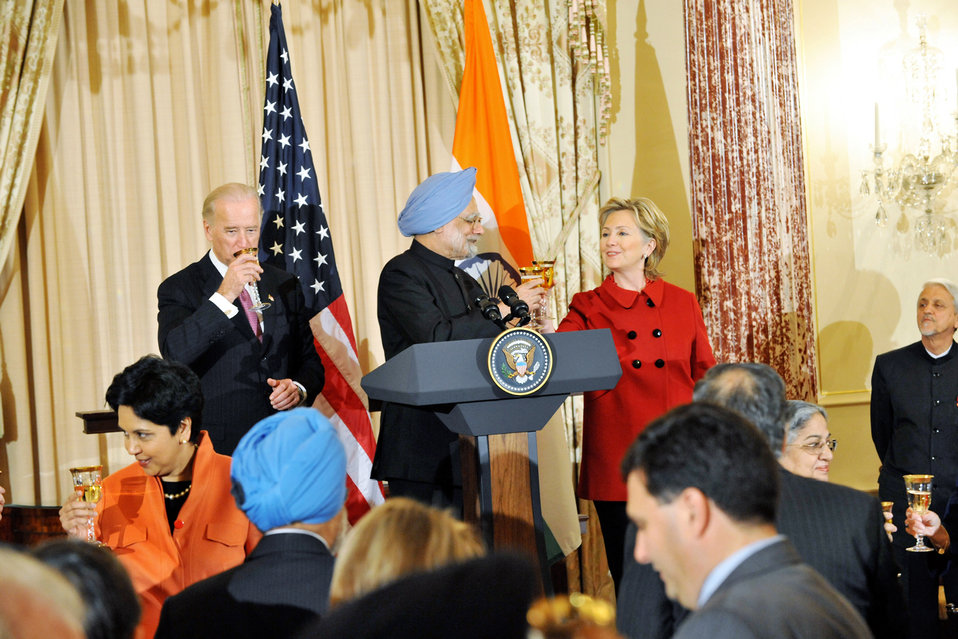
Vice-President Biden, Secretary Clinton Co-Host Social Lunch in Honor of Indian Prime Minister

U.S. Vice-President Joe Biden Dr. Jill Biden co-host a social lunch with U.S. Secretary of State Hillary Rodham Clinton in honor of Indian Prime Minister H.E. Dr. Manmohan Singh and Dr. Gurusharan Kaur at the U.S. Department of State in Washington, DC November 24, 2009.